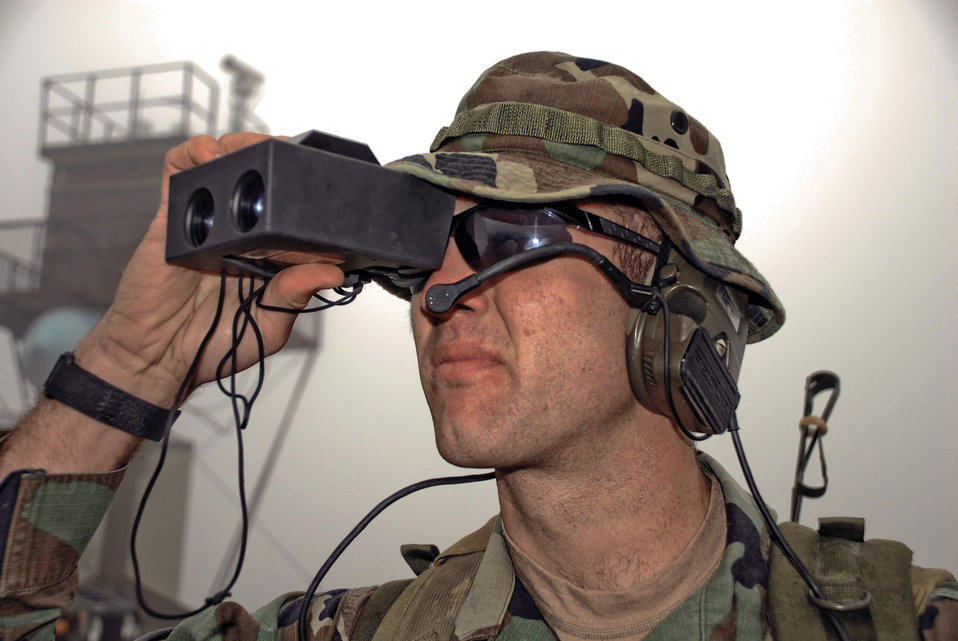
Combat controllers support Northern Edge 09

An Air Force combat controller uses a laser range finder, which helps him direct pilots to their correct targets. During this training mission June 23, several combat controllers called in airstrikes on Fort Wainwright's Range 2205 in Alaska. The training mission was part of Northern Edge 2009, an exercise designed to prepare joint forces to respond to crises in the Asian Pacific region.